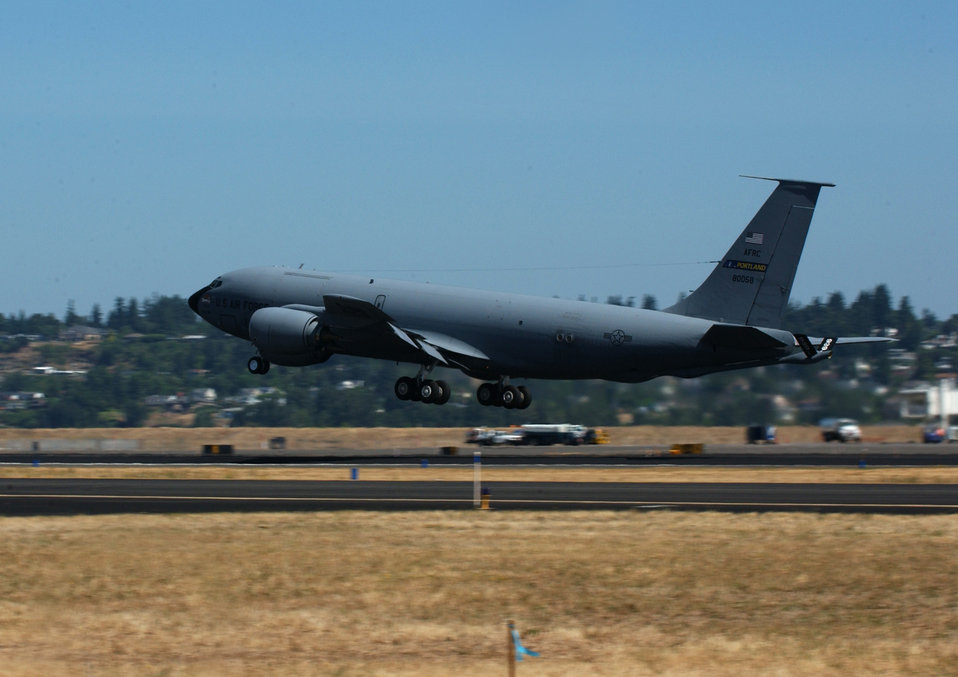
Air Force Reserve expands KC-135 force at March ARB

A KC-135 Stratotanker takes off Aug. 5 from Portland International Airport, Ore. Air Force Reserve Command officials transferred four KC-135s to the 452nd Air Mobility Wing at March Air Reserve Base, Calif.